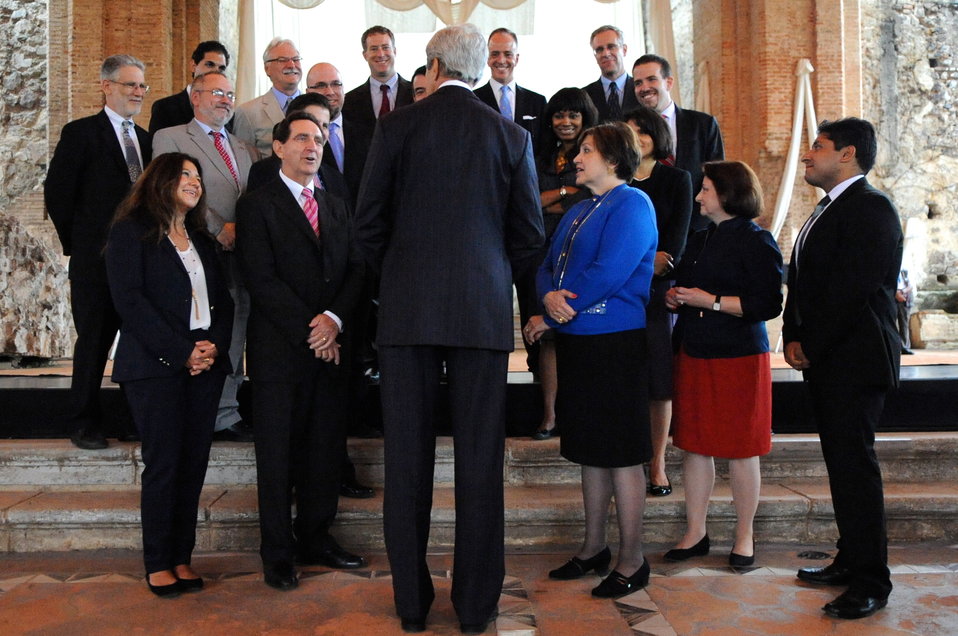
Secretary Kerry Speaks With U.S. Mission to the OAS Staff

U.S. Secretary of State John Kerry speaks with U.S. Mission to the Organization of American States staff in Antigua, Guatemala, on June 4, 2013.